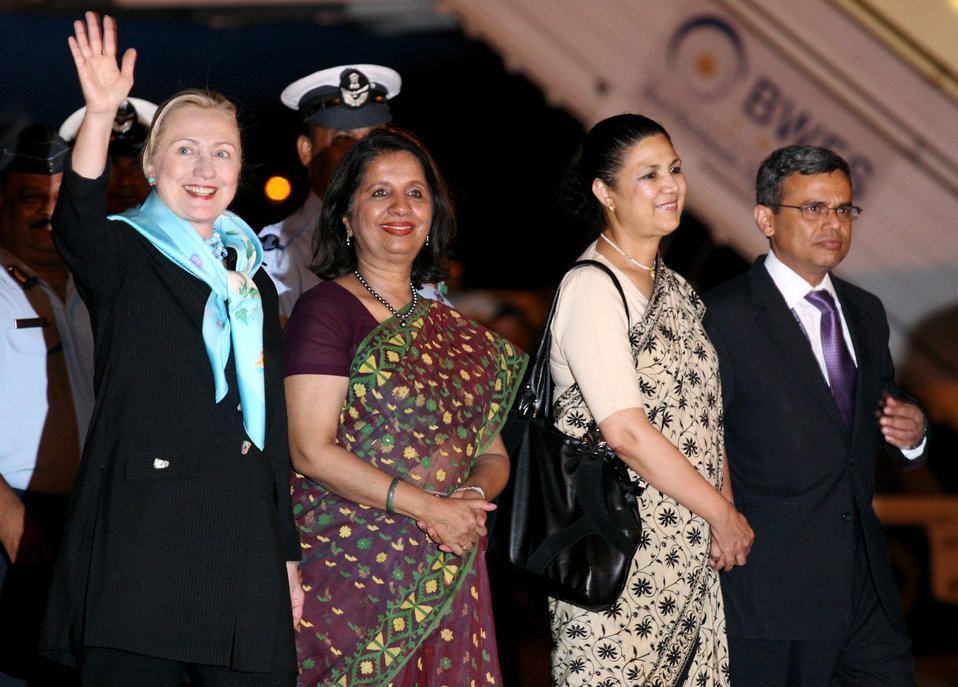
Secretary Clinton Waves Upon Arriving in New Delhi, India

U.S. Secretary of State Hillary Rodham Clinton waves to the crowd after arriving in New Delhi, India, on July 18, 2011. Indian Foreign Secretary Nirupama Menon Rao is standing to Secretary's right. Secretary Clinton will lead the U.S. delegation at the second round of the U.S.-India Strategic Dialogue.